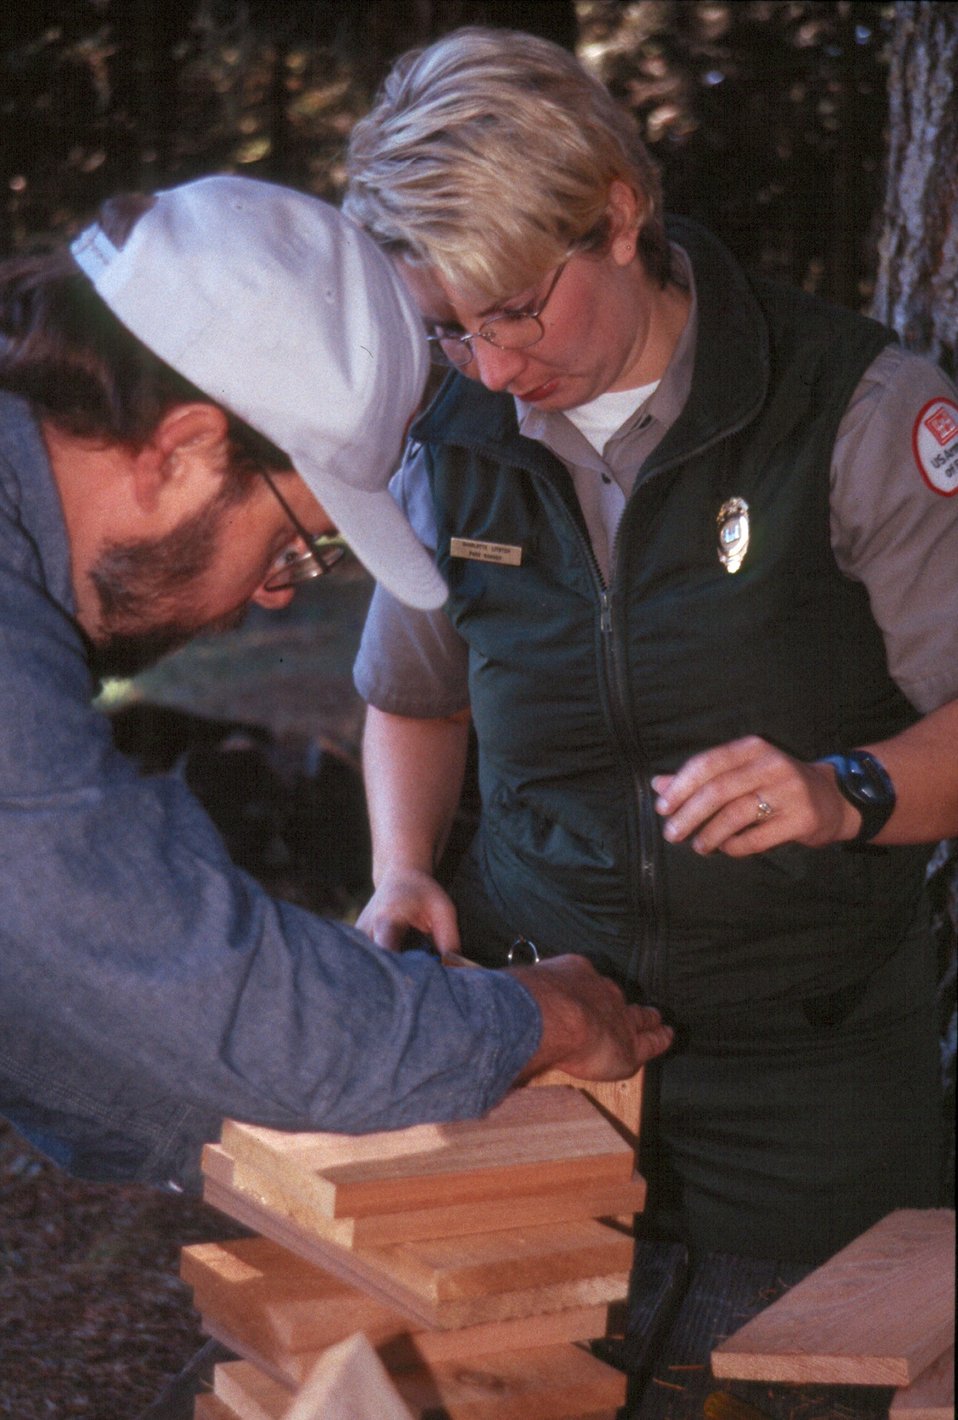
"Volunteer Scott Center with Corps employee Charlott Lister assemble bird boxes"